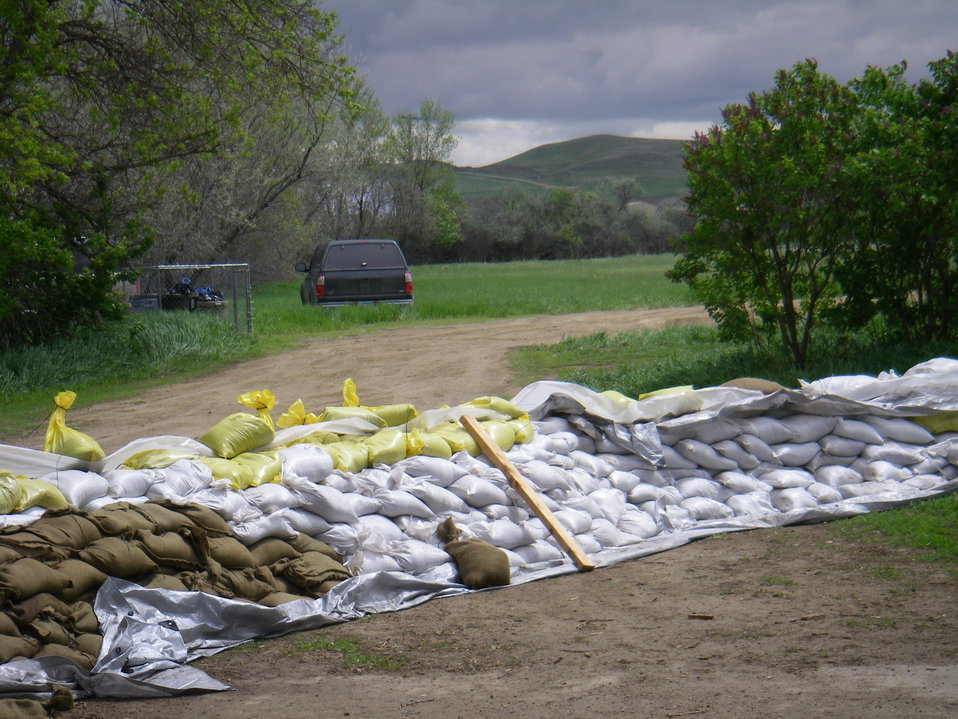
Sand Bags Protect Property

As the Missouri river continues to rise, the U.S. Fish and Wildlife Service and other partners volunteer to fill sand bags and take other preemptive measures to protect lives and property below Garrison Dam in the Bismarck/Mandan area in North Dakota. With planned releases from the dam expected to nearly double the river’s flow in the next two weeks, more flooding is expected.